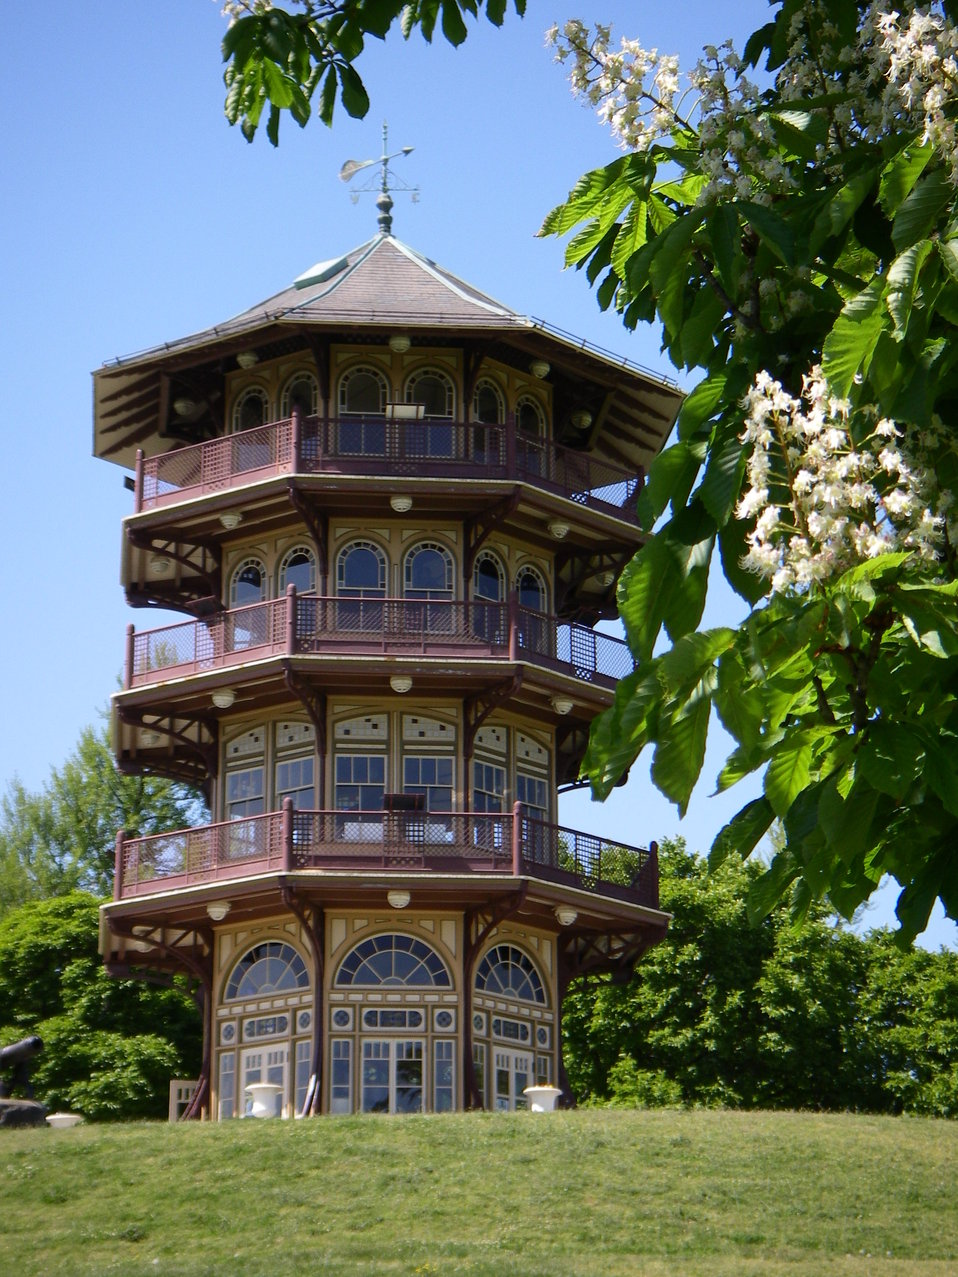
The Patterson Park Pagoda on Fort Hill, Baltimore.